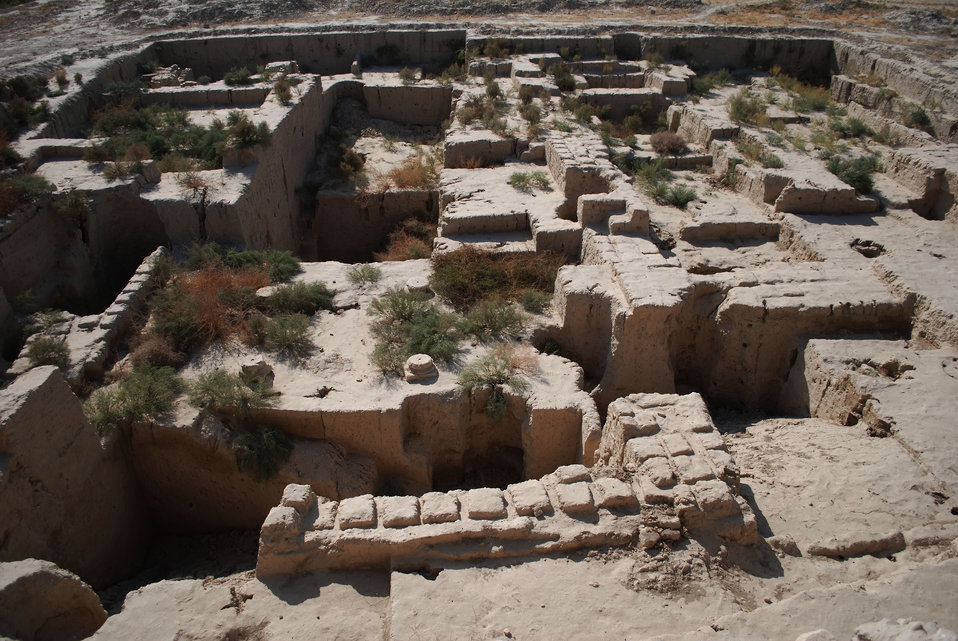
'On the Road' in Balkh Province